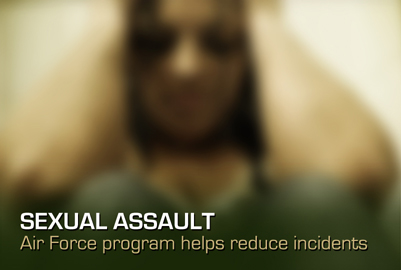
Sexual Assault Awareness Month